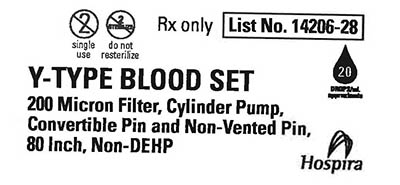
RECALLED – Blood sets used for the administration of blood and blood products

August 13, 2013 – Product Recall – Hospira Issues Important Safety Information for Blood Sets.